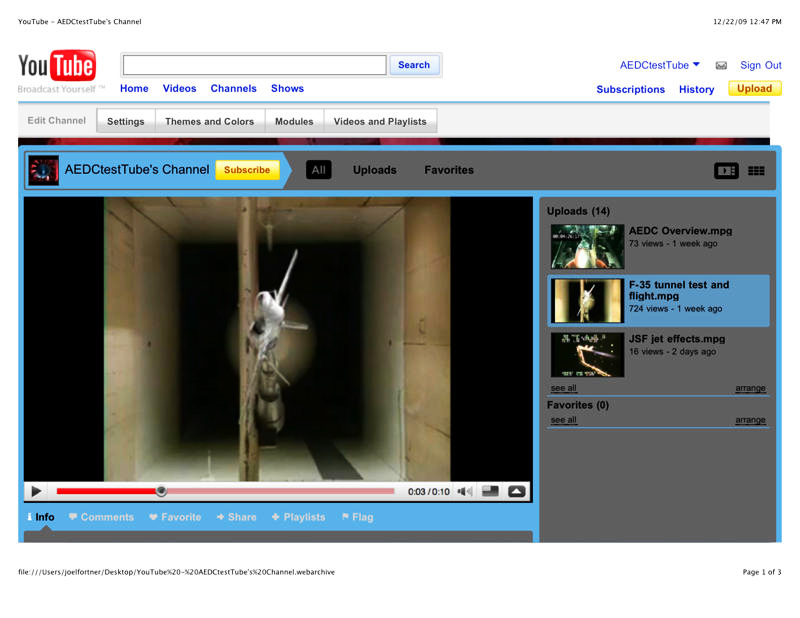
AEDC on YouTube

Arnold Engineering Development Center officials have launched a YouTube channel to showcase various systems tested at the center.